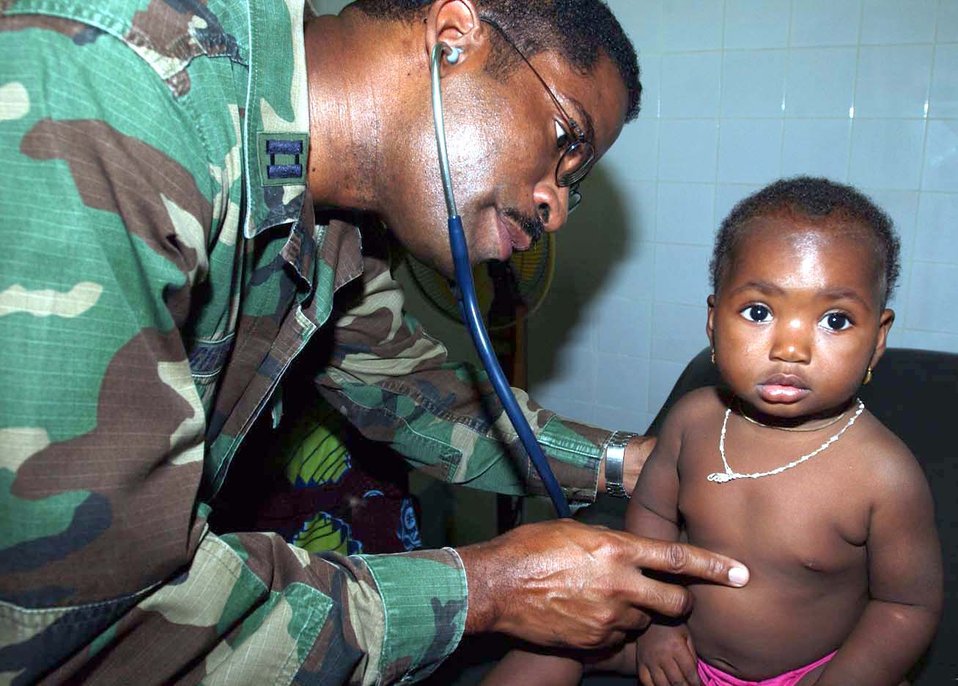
A helping hand

CAMP TONDIBIAH, Niger -- Capt. Andrew Gibson checks a Nigerian girl's health in a medical clinic here. Captain Gibson is part of a 12-person Air Force Reserve Command medical team performing a humanitarian mission in Niger. He is a physician's assistant assigned to the 6th Medical Group at MacDill Air Force Base, Fla.